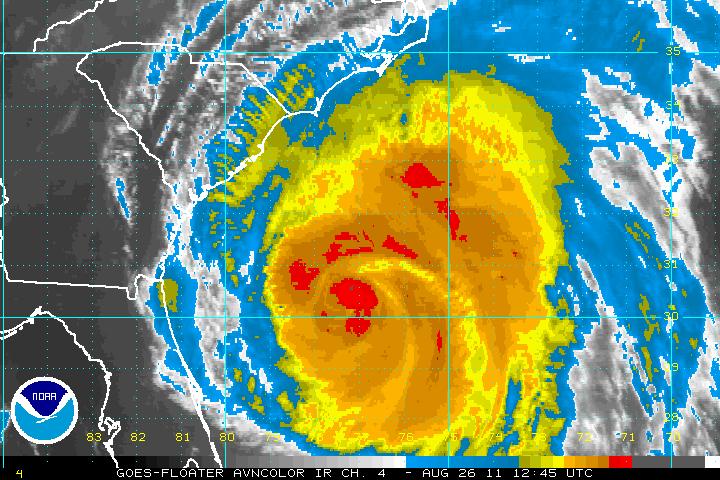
Hurricane Irene

Satellite imagery of Hurricane Irene on Aug. 26, 2011.